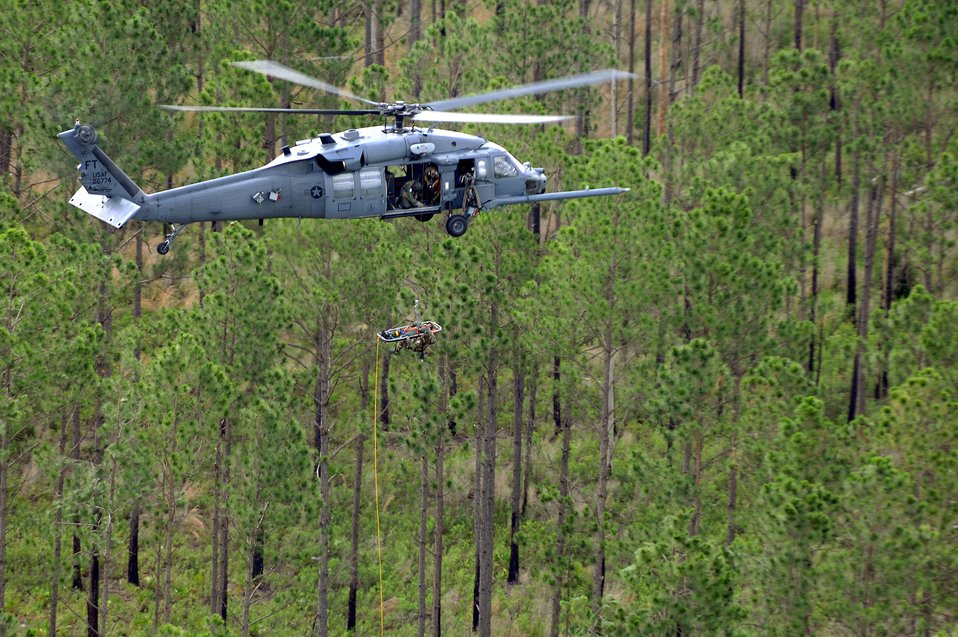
Doing something amazing

An HH-60 Pave Hawk crew hoists a